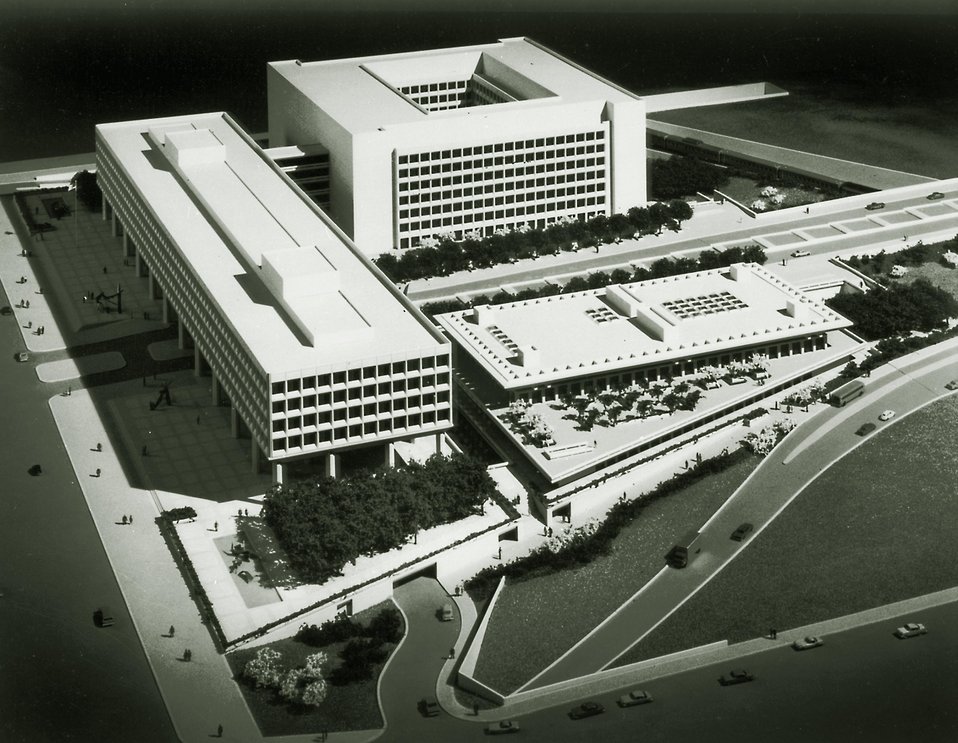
Federal Office building No. 5 Washington DC